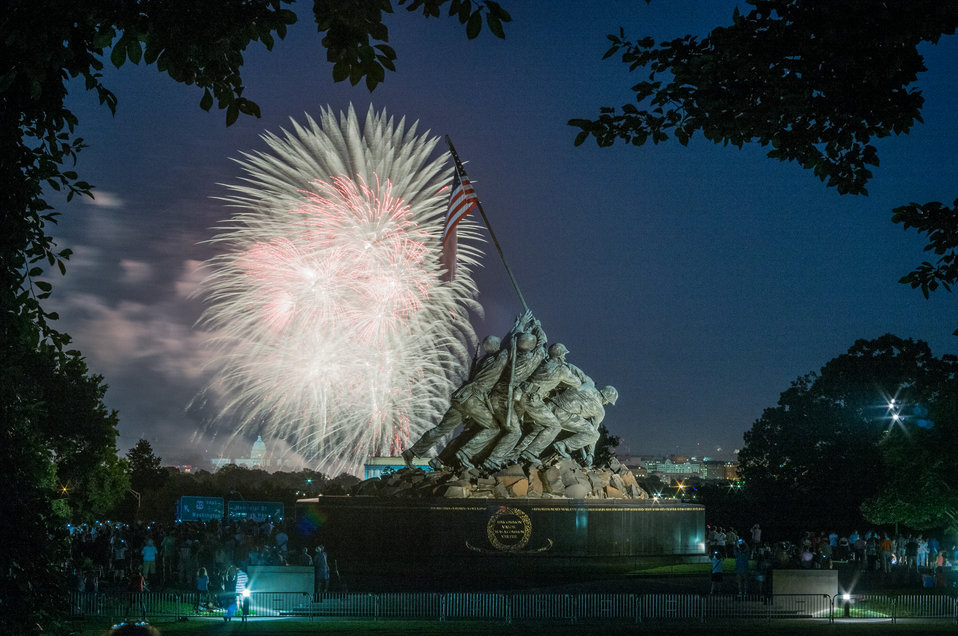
Independence Day celebration fireworks are seen from the Iwo Jima, U.S. Marine Corps Memorial in Arlington, VA on Jul. 4, 2013. In the distance are the Lincoln Memorial, the U.S. Department of Agriculture (USDA) Yates Building (dark red brick building), the Washington Monument (with scaffolding), and the U.S. Capitol building in Washington, D.C.